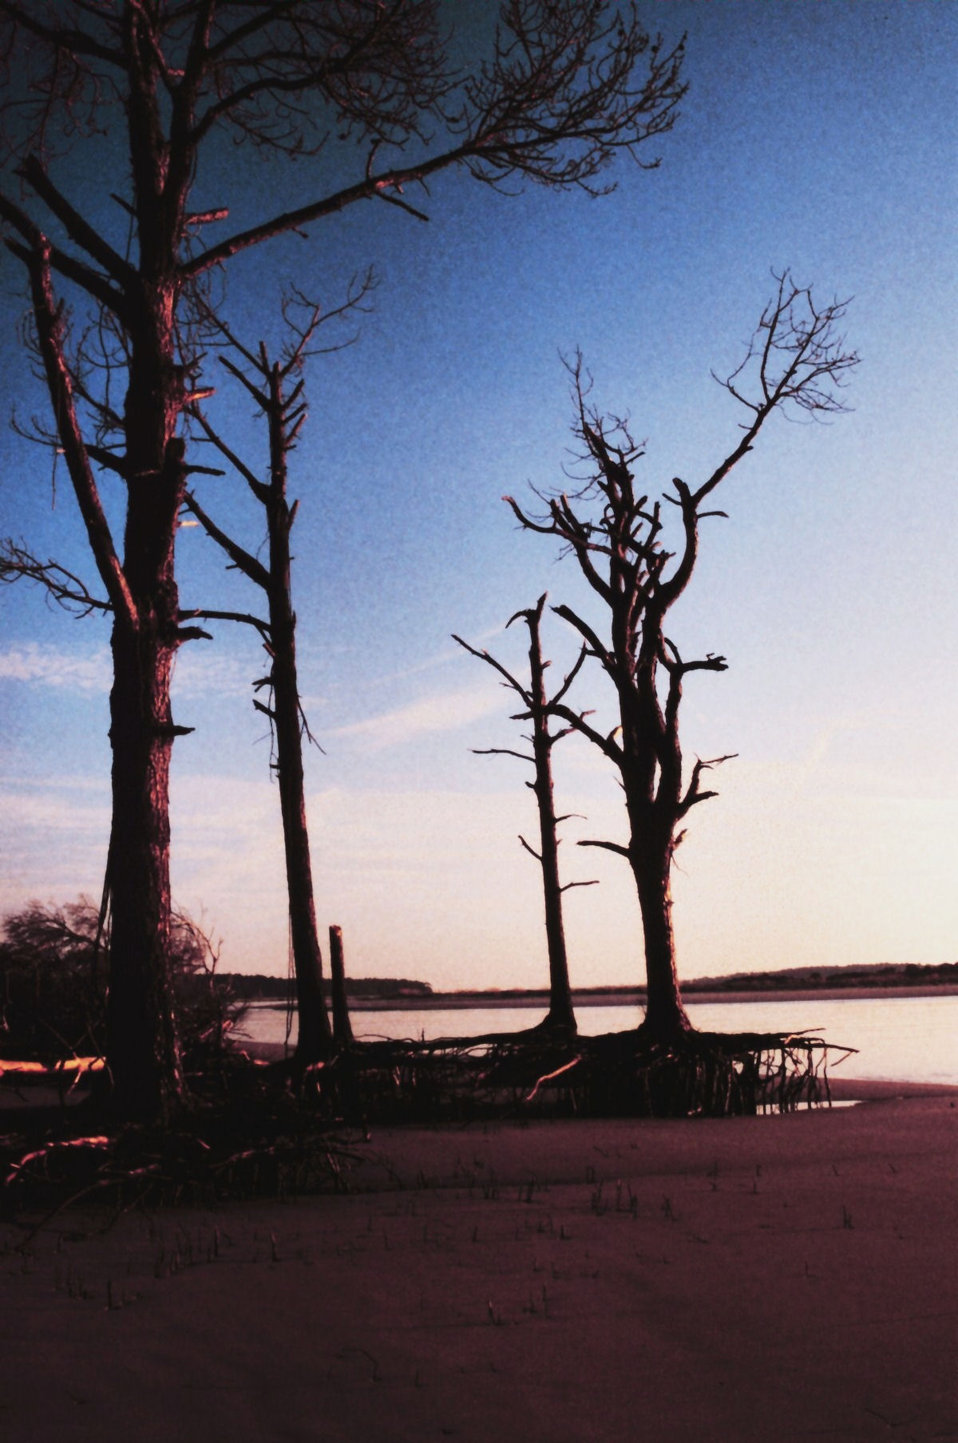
Tree roots exposed because of erosion on the north end of Sapelo's beach. Typical of barrier islands, sand from the north end of Sapelo and Blackbeard is eroded away by ocean currents and deposited at the south end where sand dunes continue to build. The erosion leaves behind trees that were once protected by dunes exposed to the ocean.